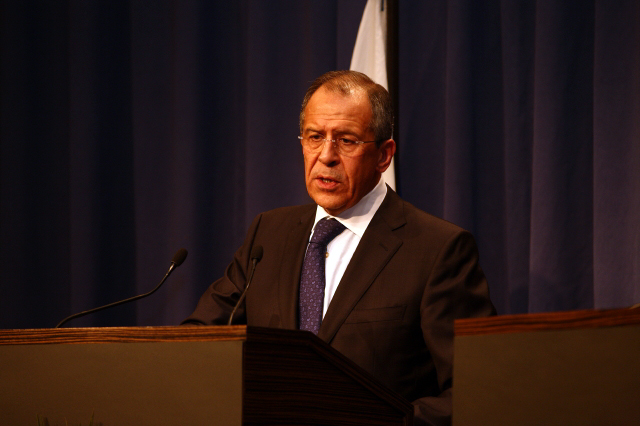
Press Conference With Russian Foreign Minister

Press conference after dinner meeting between U.S. Secretary of State Hillary Rodham Clinton and Russian Foreign Minister Sergey Lavrov in Geneva, Switzerland March 6, 2009.